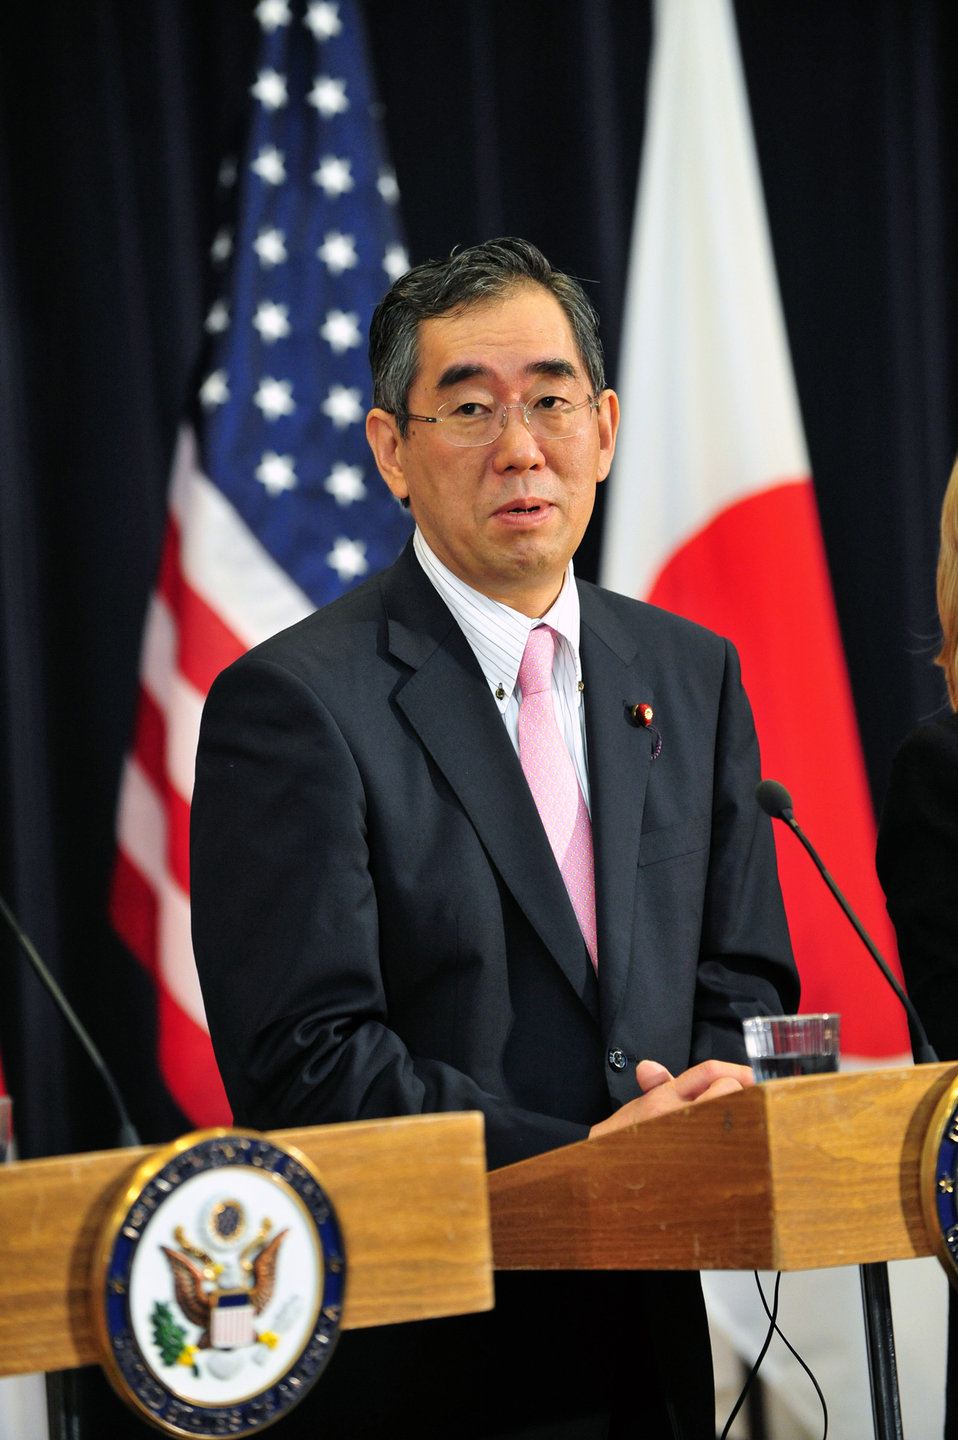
Japanese Foreign Minister Matsumoto Delivers Remarks

Japanese Foreign Minister Takeaki Matsumoto delivers remarks at the joint press conference after the U.S.-Japan Security Consultative Committee meeting, known as the 2 2, at the U.S. Department of State in Washington, D.C., on June 21, 2011.